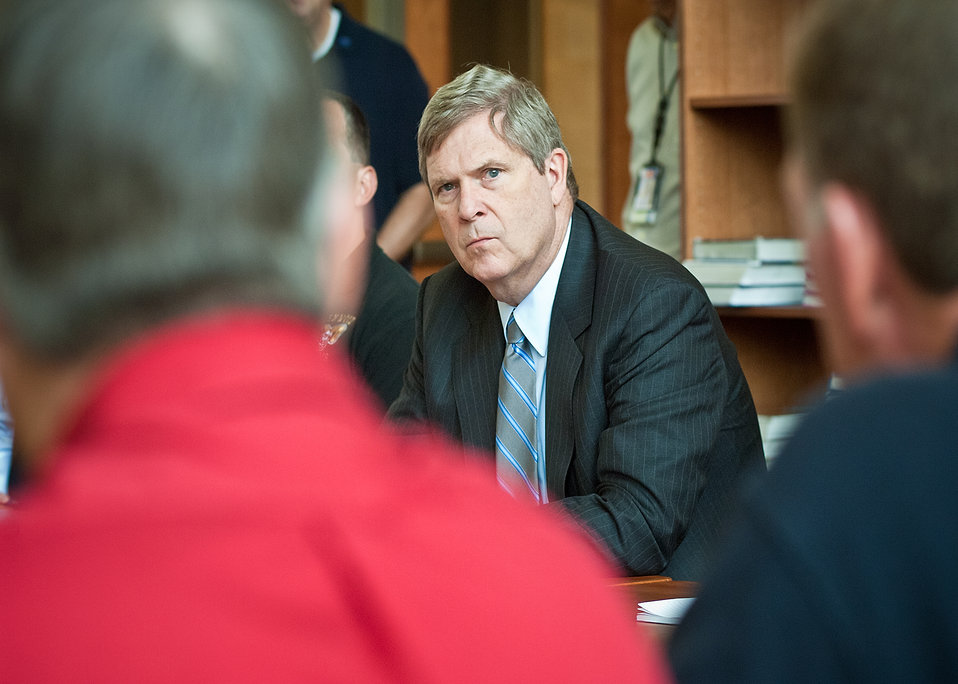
Agriculture Secretary Tom Vilsack listens to questions posed by farmers during a town hall meeting at the Glenwood Community High School in Glenwood, Iowa on Thursday, June 16, 2011. Farmers, local and regional media listened and questioned Secretary Vilsack on the cause of the floodwaters along the Missouri River affecting Iowa and Nebraska. Secretary Vilsack offered advice and assistance available through the United States Department of Agriculture and other federal agencies.